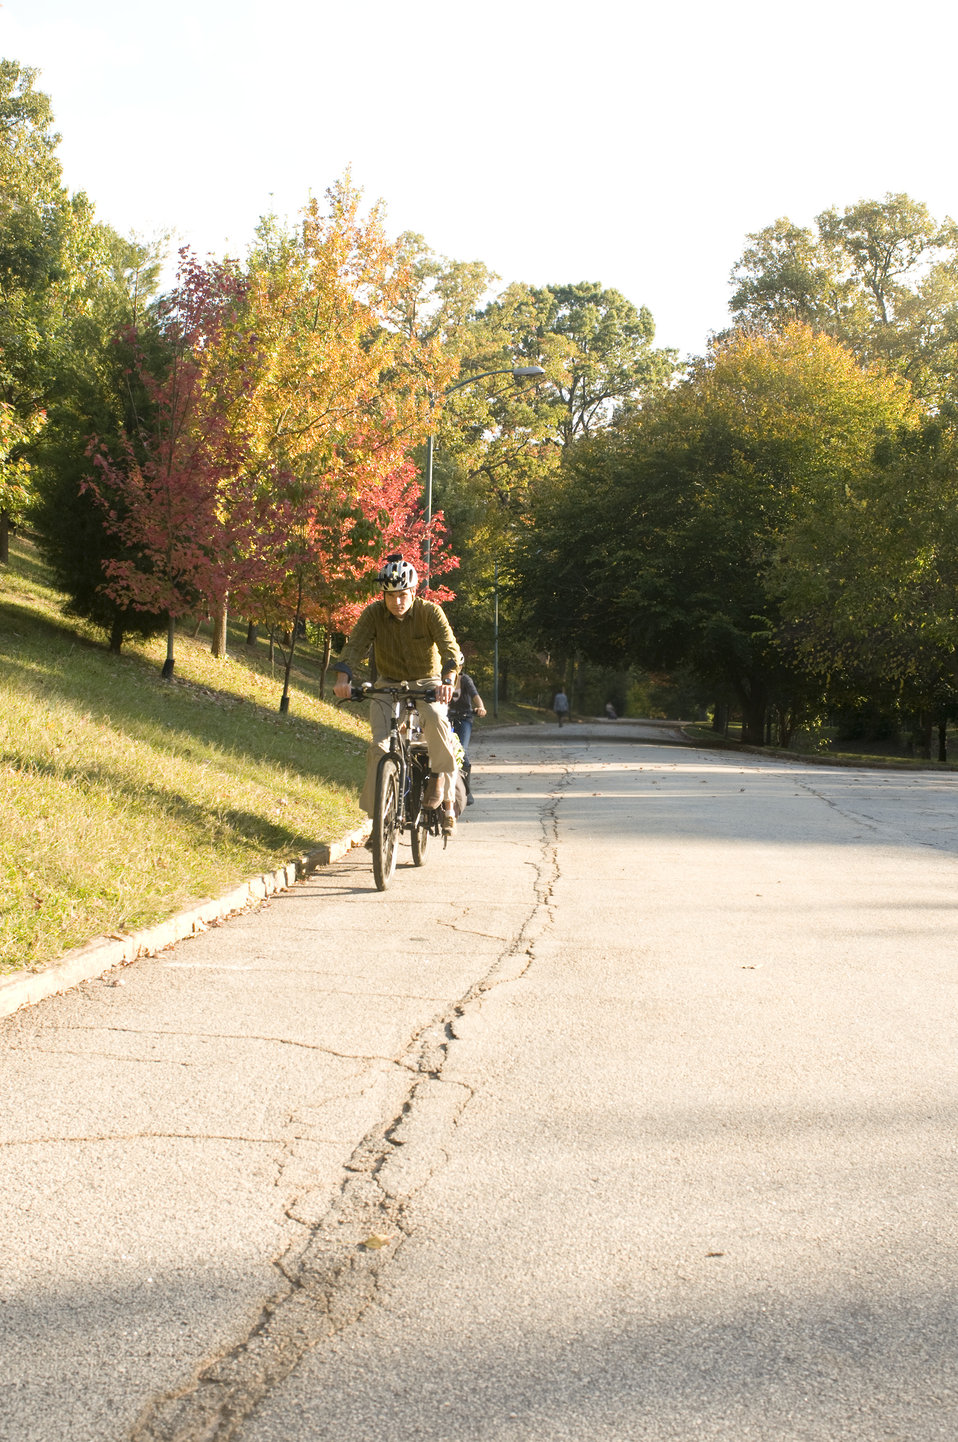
Protective measures having been taken by a careful father, this dad and his two young children were on their way, as they embarked on a Georgian bicycle trip. Riding behind her father, the daughter was riding her own bike, while the son, seated in a small child-safe bicycle seat, was riding on the same bike as his dad. All three were wearing aerodynamic safety helmets, and clothing to protect them from the sun, wind and insects. The only thing missing, was a piece of outerwear, which was very bright in color, allow for a greater degree of rider visibility.